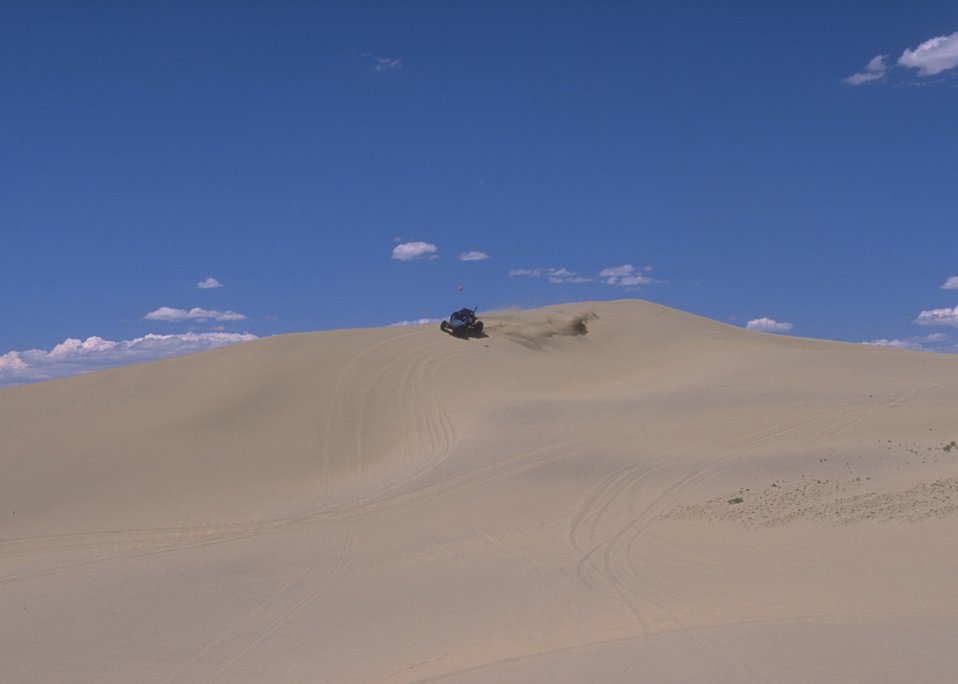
Sand Dunes OHV Area, Rock Springs Field Office.